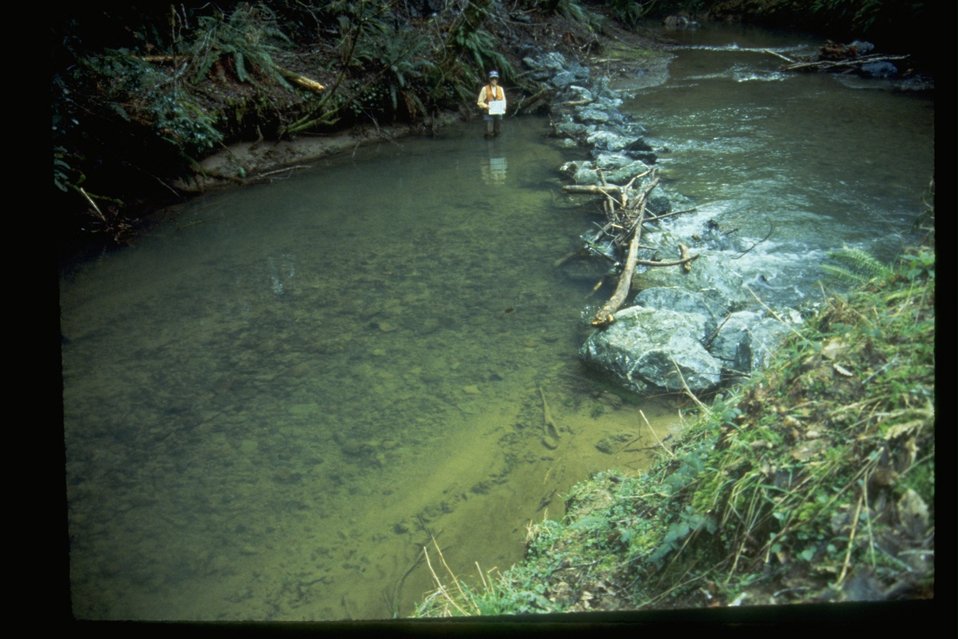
Rock weir in a stream.